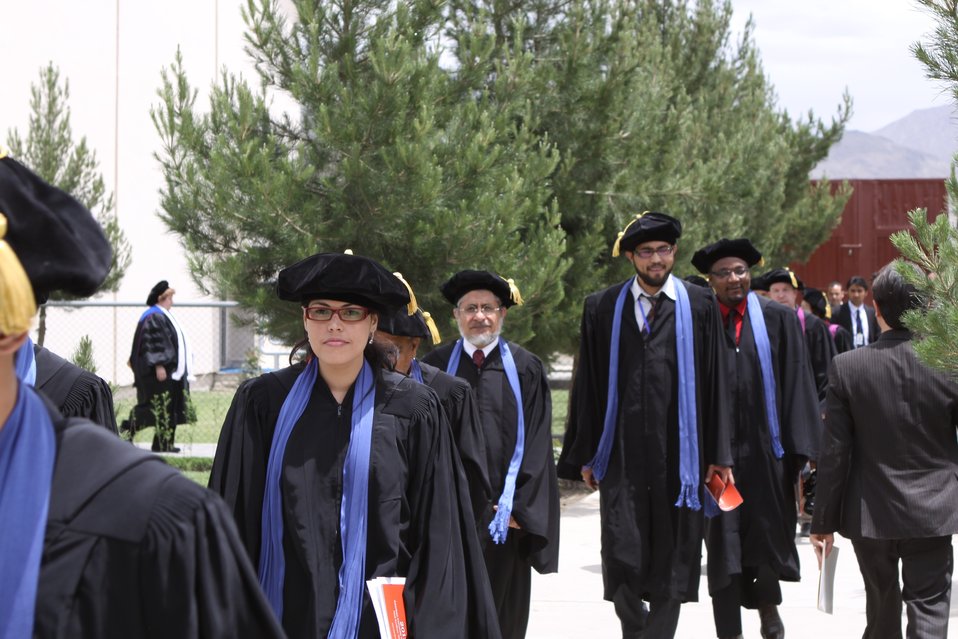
100526 AUAF Graduation 333